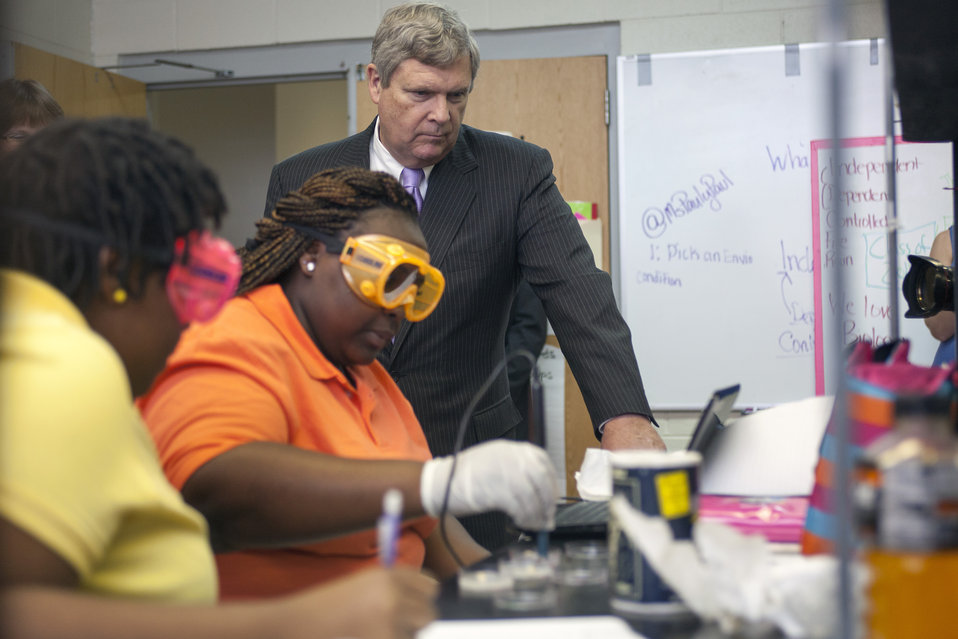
Agriculture Secretary Tom Vilsack tours the school facilities at Northeast Regional School of Biotechnology and Agriscience in Plymouth, NC on Friday, Aug. 15, 2013.